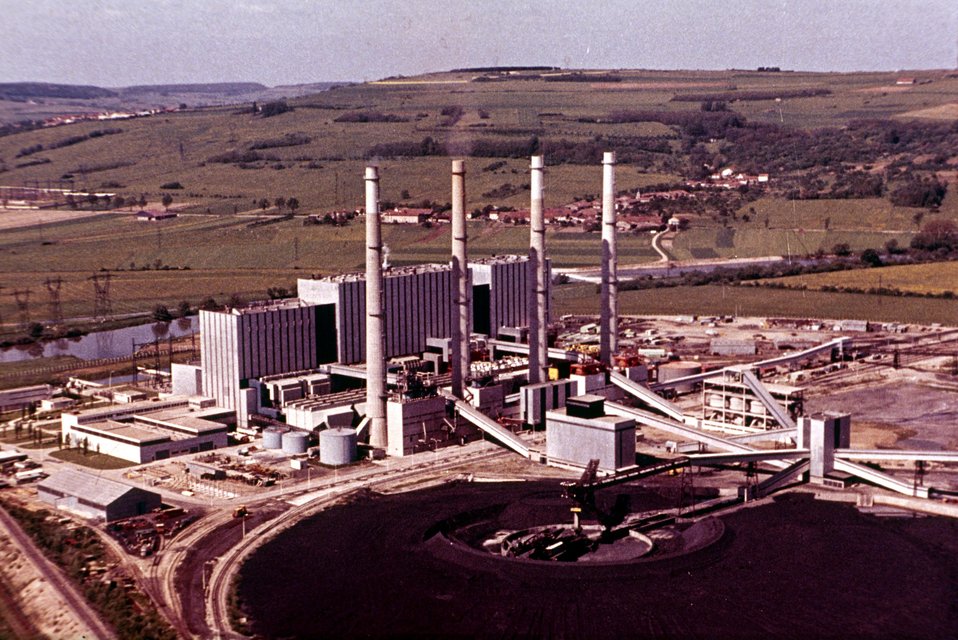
Une centrale thermique classique.